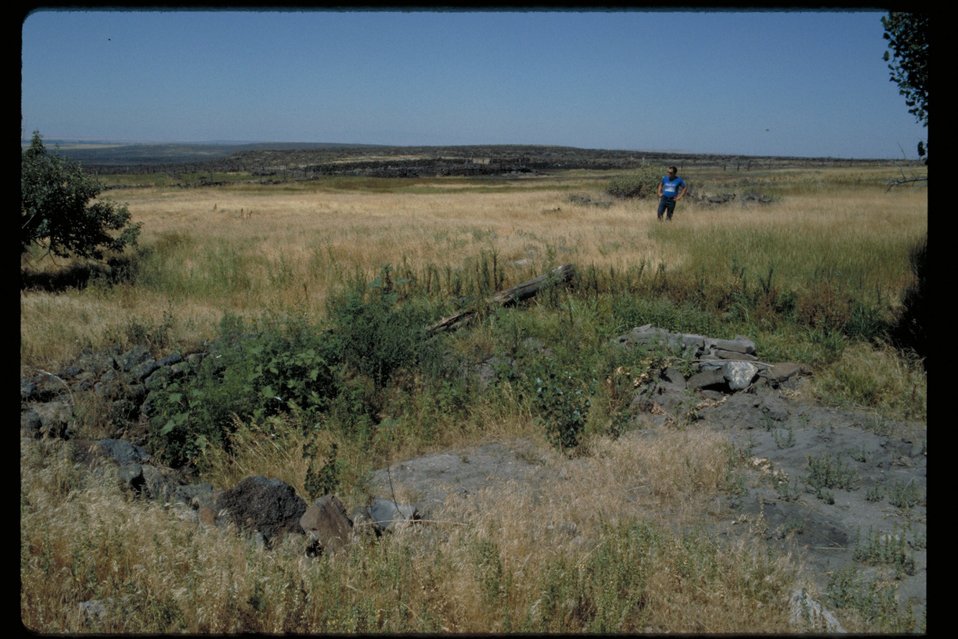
Oregon Trail Rock foundation Lower Snake River District